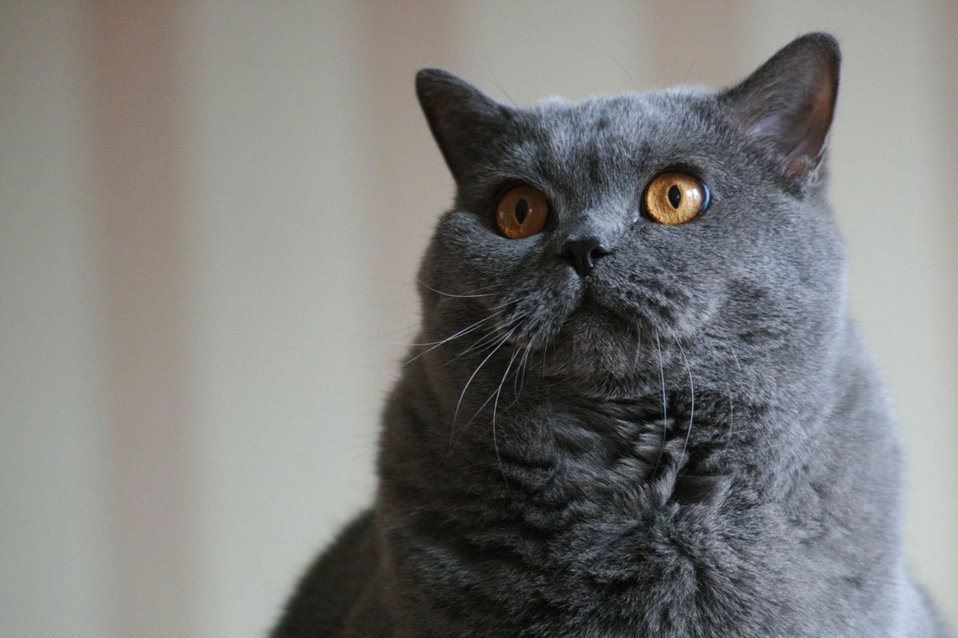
Boris

British blue shorthair.